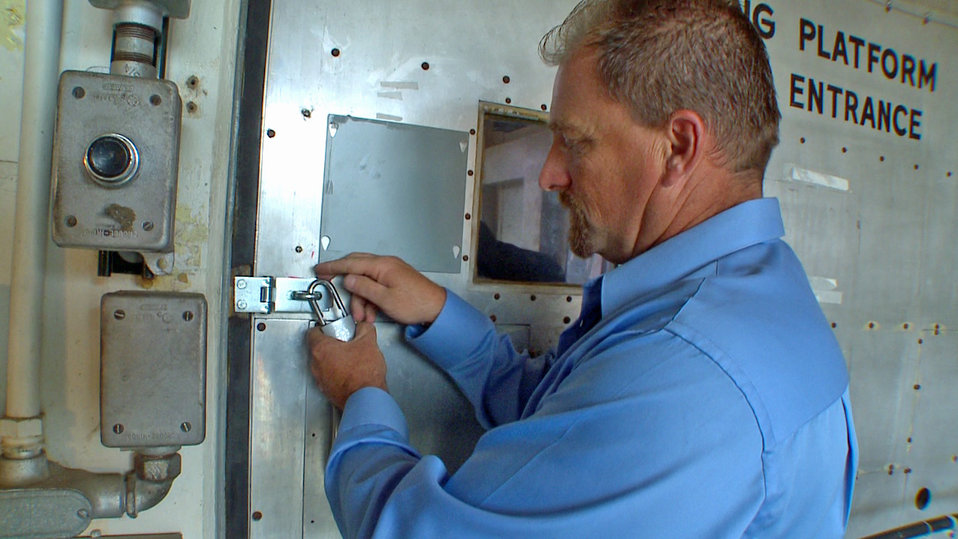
Recovery Act Speeds Closure of Research Reactor

Lou Evers, a member of the HFBR project team, locks the HFBR door.
****
The American Recovery and Reinvestment Act helped Brookhaven National Laboratory secure a major milestone recently by providing $6 million for cleanup and closure of a research reactor.

The door to the High Flux Beam Reactor (HFBR) is now locked, and the facility will be in a hibernation for up to 65 years. That’s the period needed for radiation levels to naturally decay so the reactor may be removed safely using conventional demolition techniques.